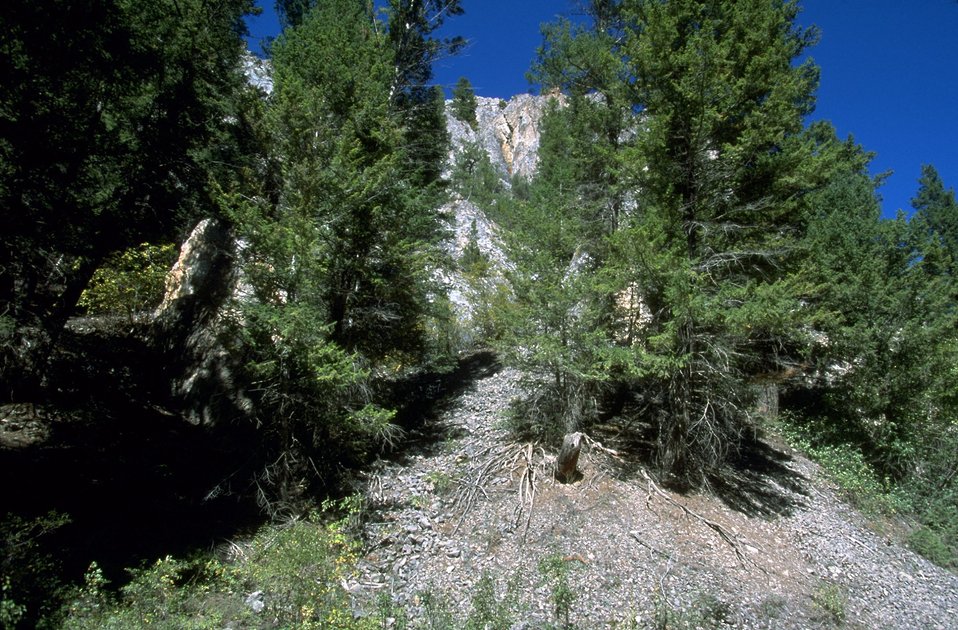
Rattler Gulch-Limestone Cliffs ACEC